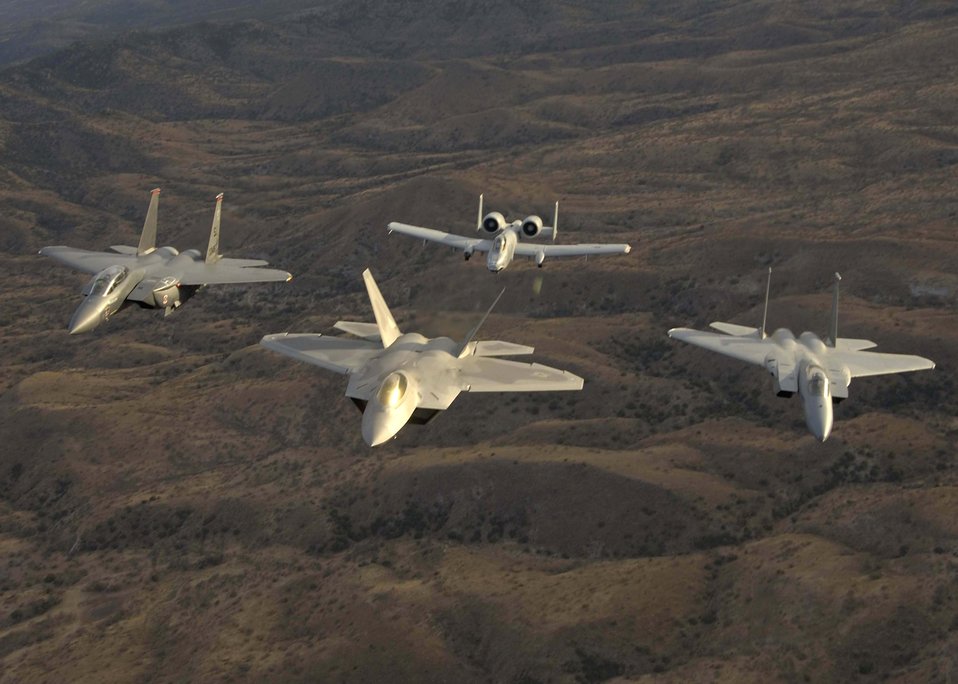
Heritage flight

Two F-15 Eagles fly alongside an F-22A Raptor and an A-10 Thunderbolt II over Tucson, Ariz., Sunday, March 5, 2006, during the 2006 Heritage Conference. The conference combines different U.S. aircraft from more than 60 years of aviation history to ensure certification in performing air shows worldwide.